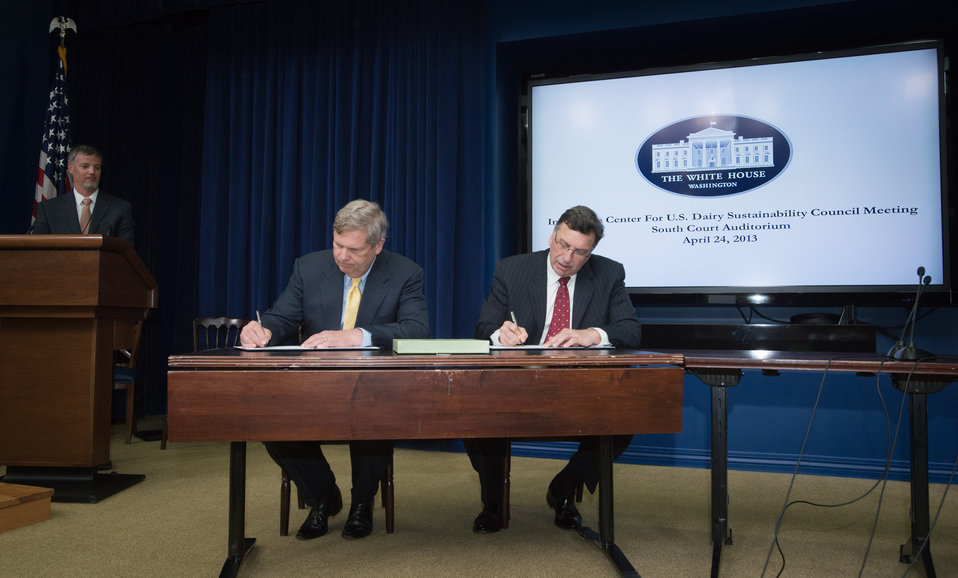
Agriculture Secretary Tom Vilsack and Innovation Center for U.S. Dairy Chief Executive Officer (CEO) Tom Gallagher sign a Memorandum of Understanding (MOU) at the Innovation Center For U.S. Dairy Sustainability Council Meeting on Wednesday, Apr. 24, 2013, at the White House, Washington, D.C. The objectives of the MOU are to increase the construction of anaerobic digesters and explore innovative ways to use products previously considered waste streams from dairy production, processing and handling.